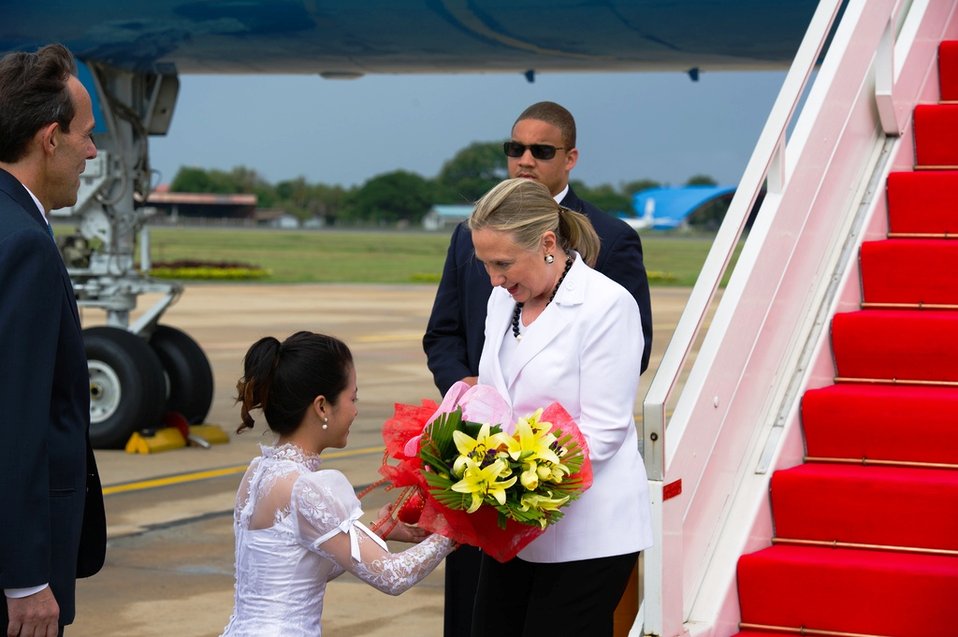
Secretary Clinton Arrives in Phnom Penh

U.S. Secretary of State Hillary Rodham Clinton arrives in Phnom Penh, Cambodia, for regional conferences including ASEAN Regional Forum and bilateral meetings on July 11, 2012.